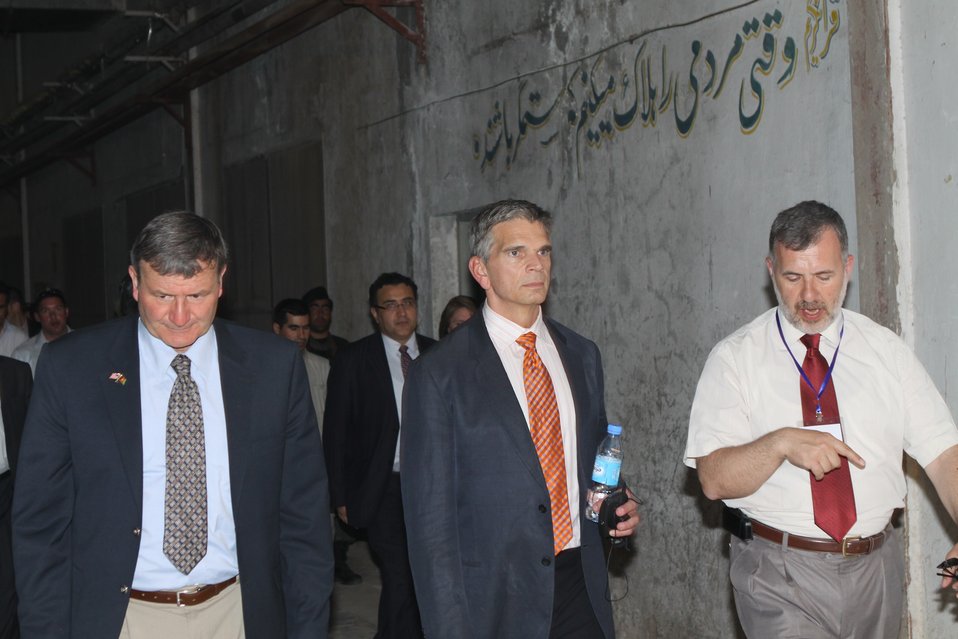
100525 Hirat Textile Company 754